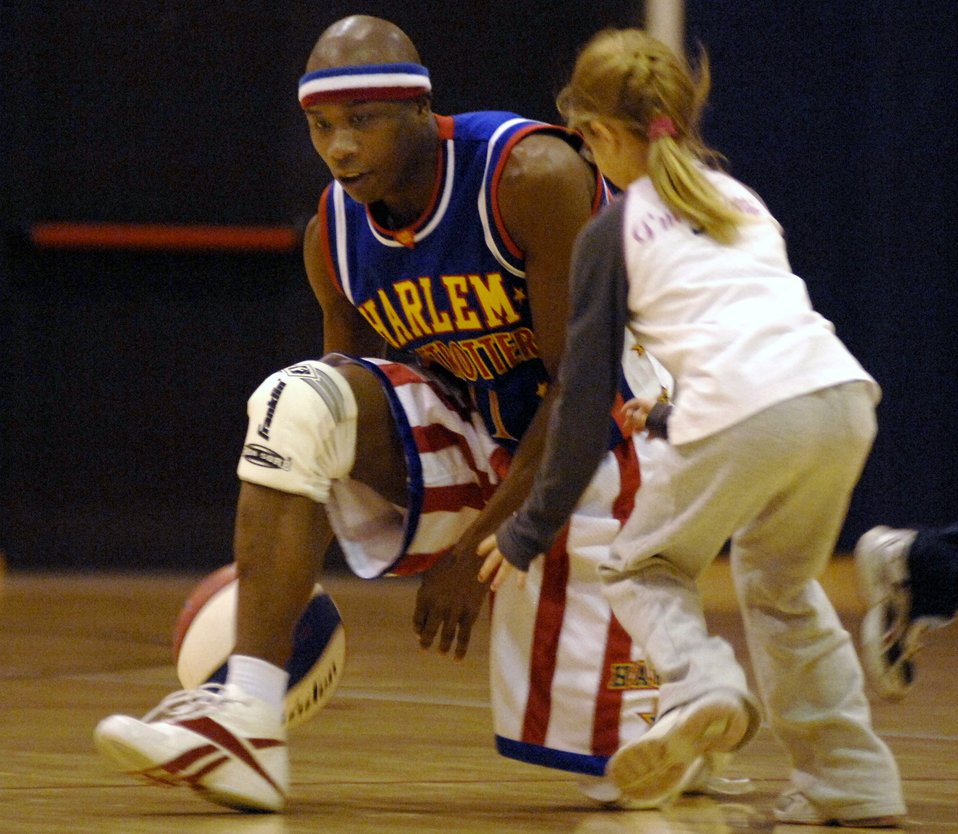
Harlem Globetrotters share the magic

Harlem Globetrotter